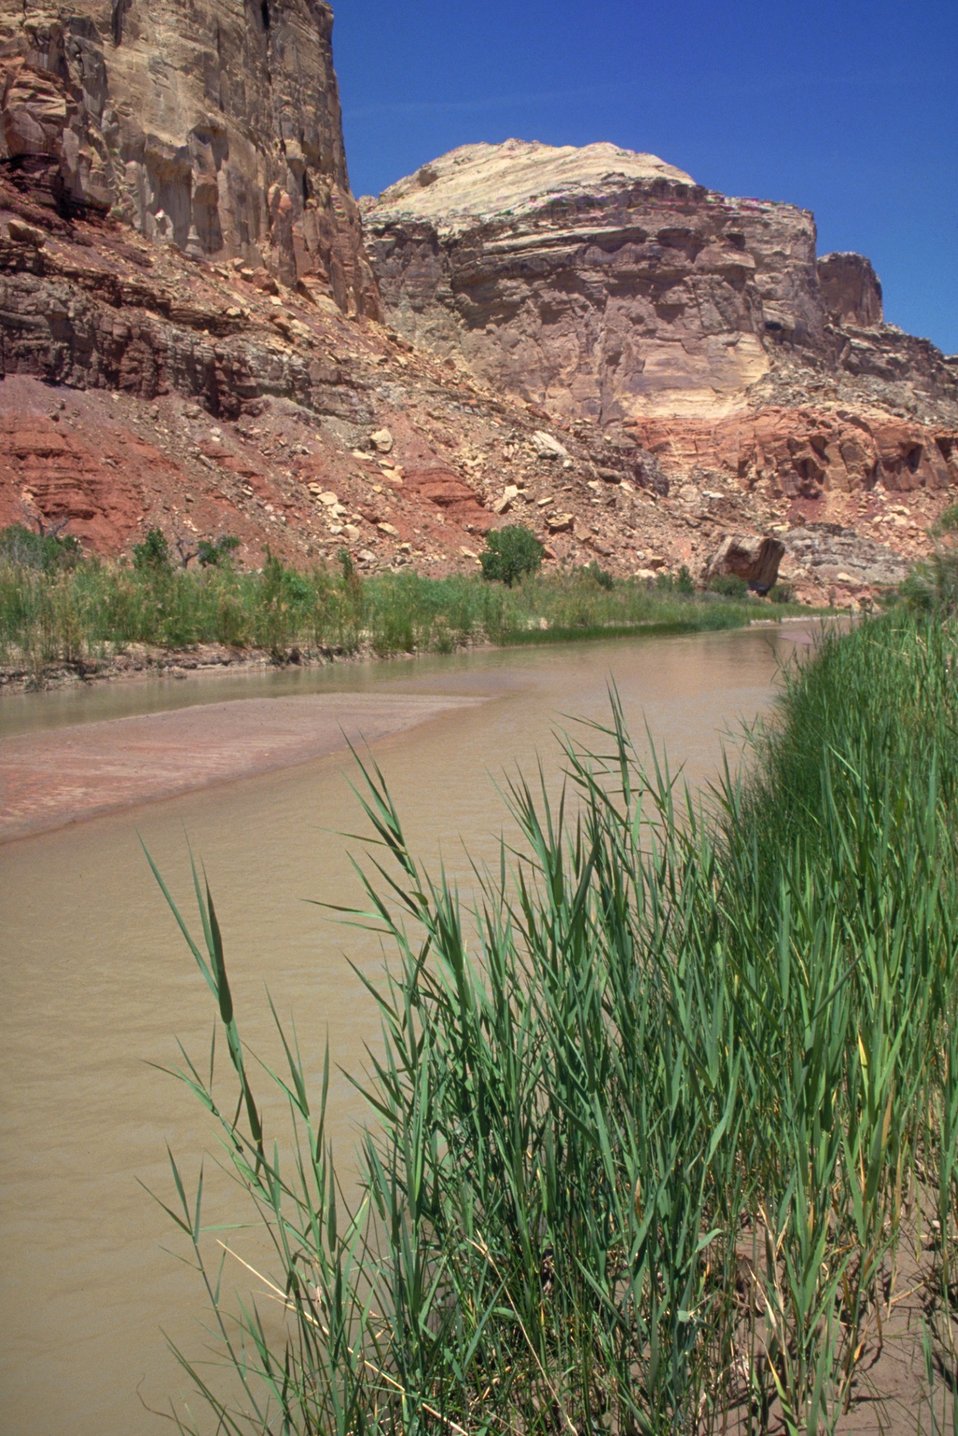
Upper Muddy Creek along the Red Canyon Loop, San Rafael Swell.